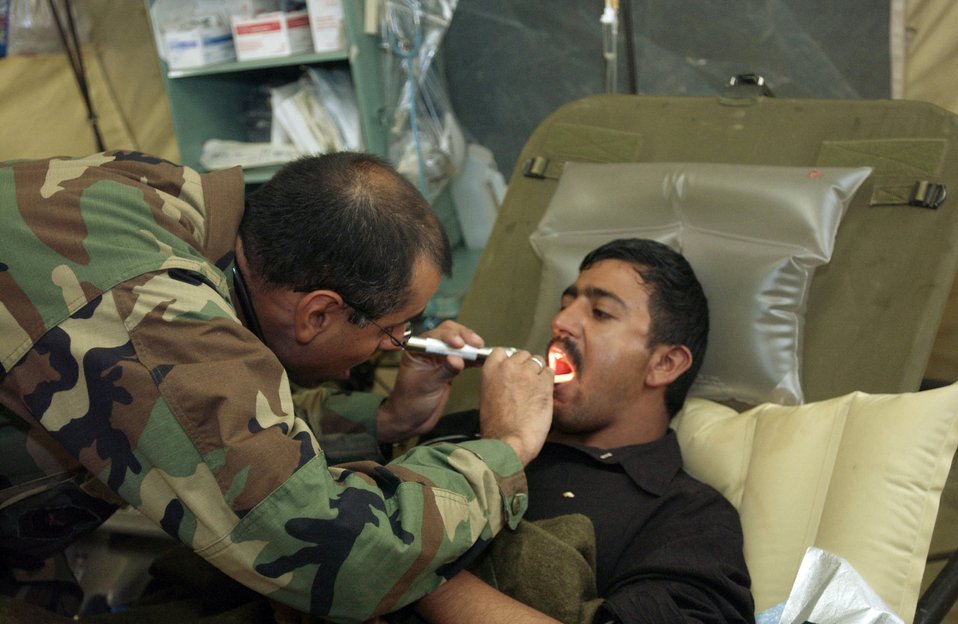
Pakistan Relief

MUZAFFARABAD, Pakistan (AFPN) -- Maj. (Dr.) Fareed Sheikh checks a patient's tonsils at the 212th Mobile Army Surgical Hospital unit here. Major Sheikh is assigned to the 212th MASH taking part in earthquake recovery operations in Pakistan.